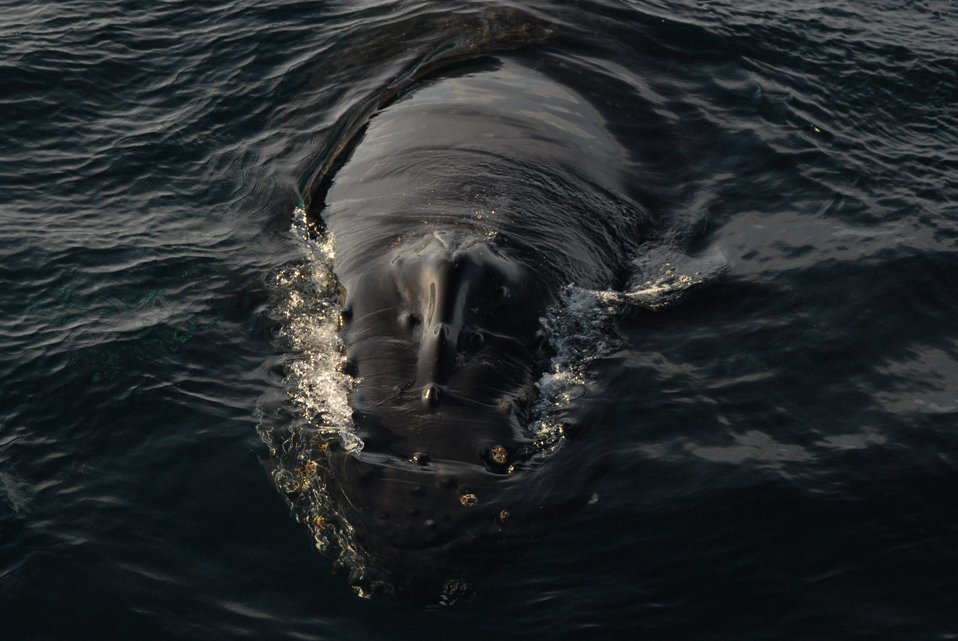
Humpback whale head